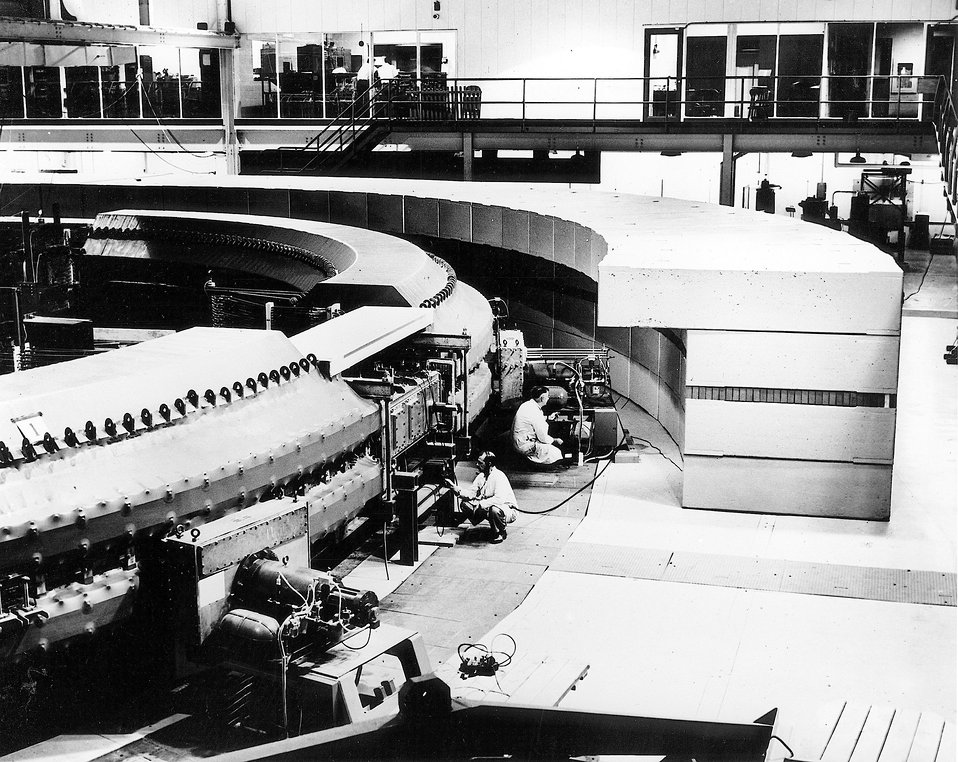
The 3 BEV Cosmotron at the Brookhaven National Laboratory. c. 1961